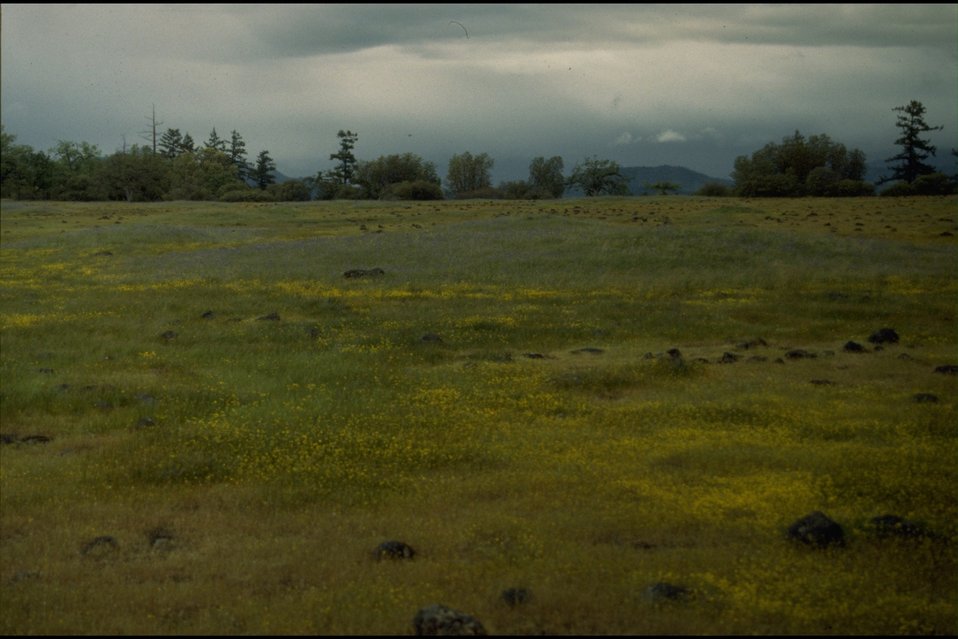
Storm clouds threaten rain over a meadow of wild flowers.